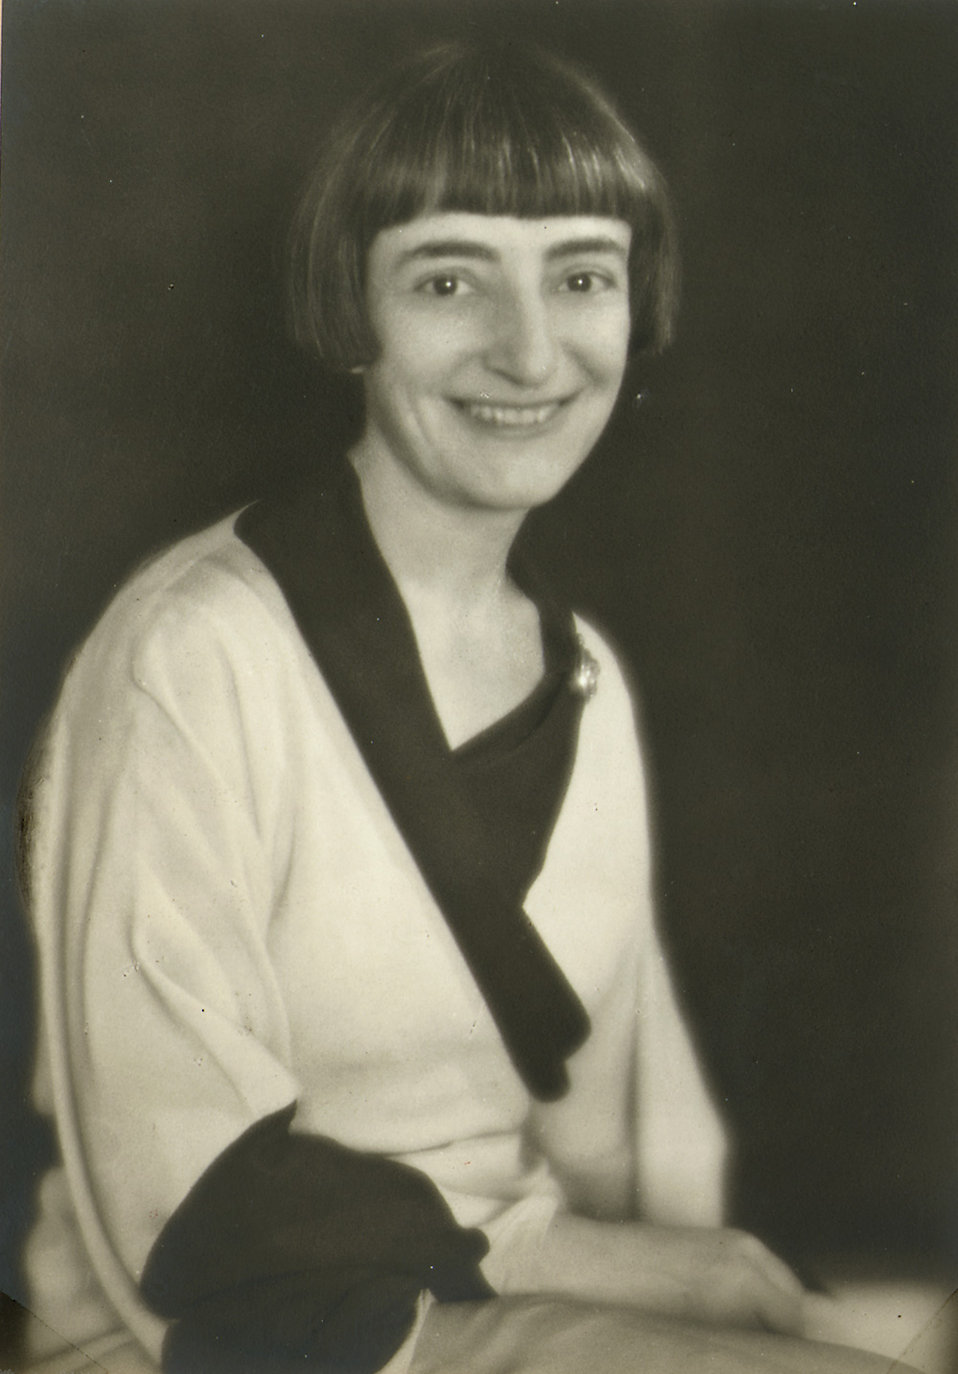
Brenda Putnam (1890-1975) - Women Artists

Sculptor of three relief portrait plaques of lawgivers in the House Chamber: Maimonides, Solon and Tribonian.